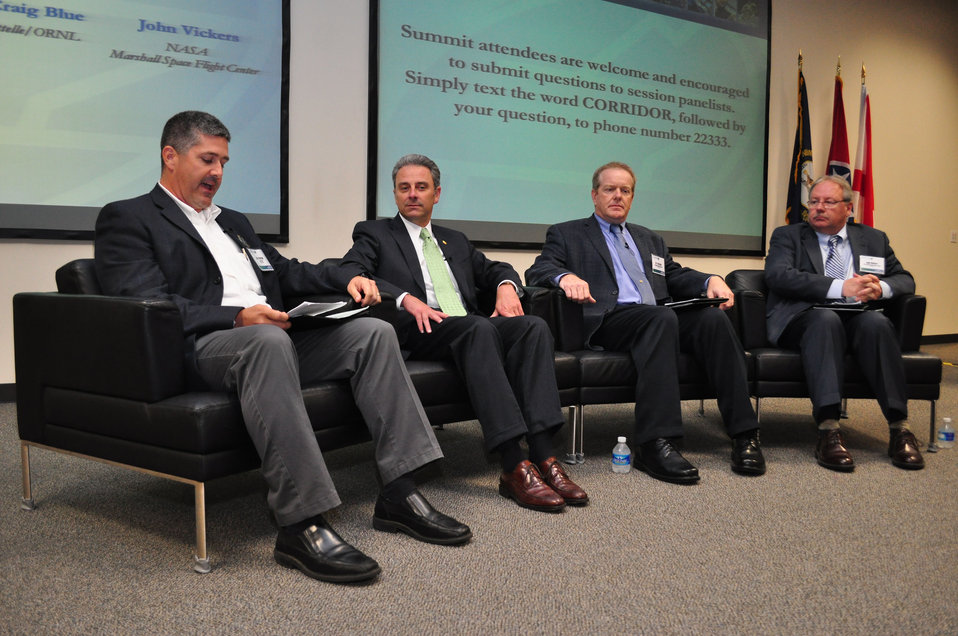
Tennessee Valley Corridor Summit Oak Ridge

13-062 DOE photo Lynn Freeny 5-29-2013 Panel Discussion L to R BuzzPatrick Tech 20/20, John Eschenberg NNSA , Dr. Craig Blue UT-Battelle/ORNL, John Vicker NASA Oak Ridge Tennessee